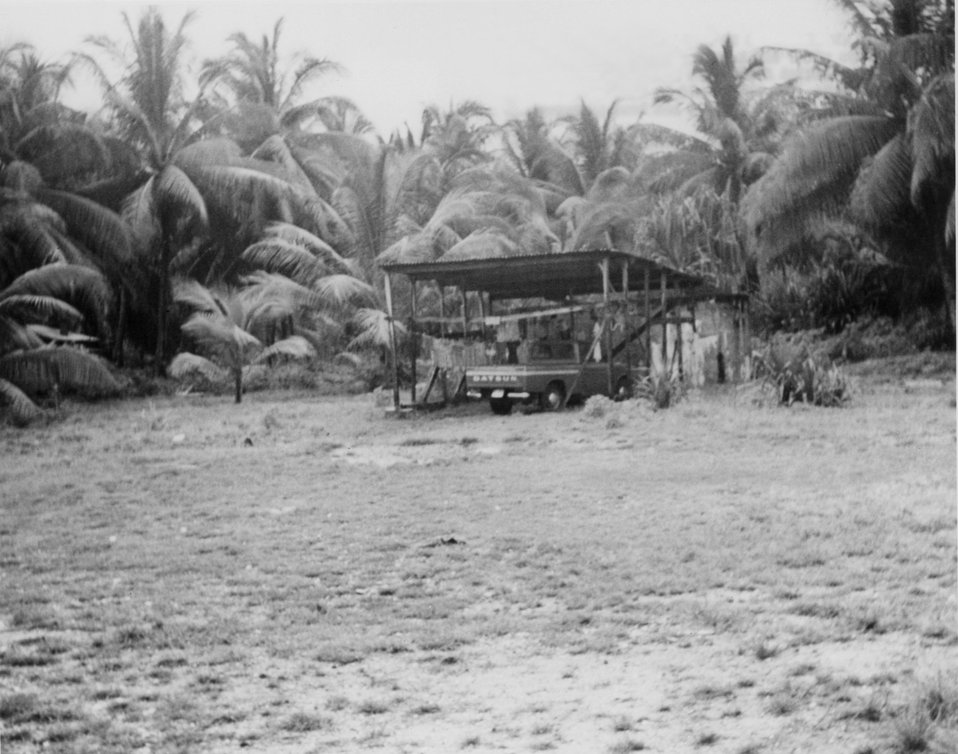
A little more than ten years after the last nuclear weapons test took place at Bikini Atoll, the Bikini people were given reassurance that they would be able to return to their home island.